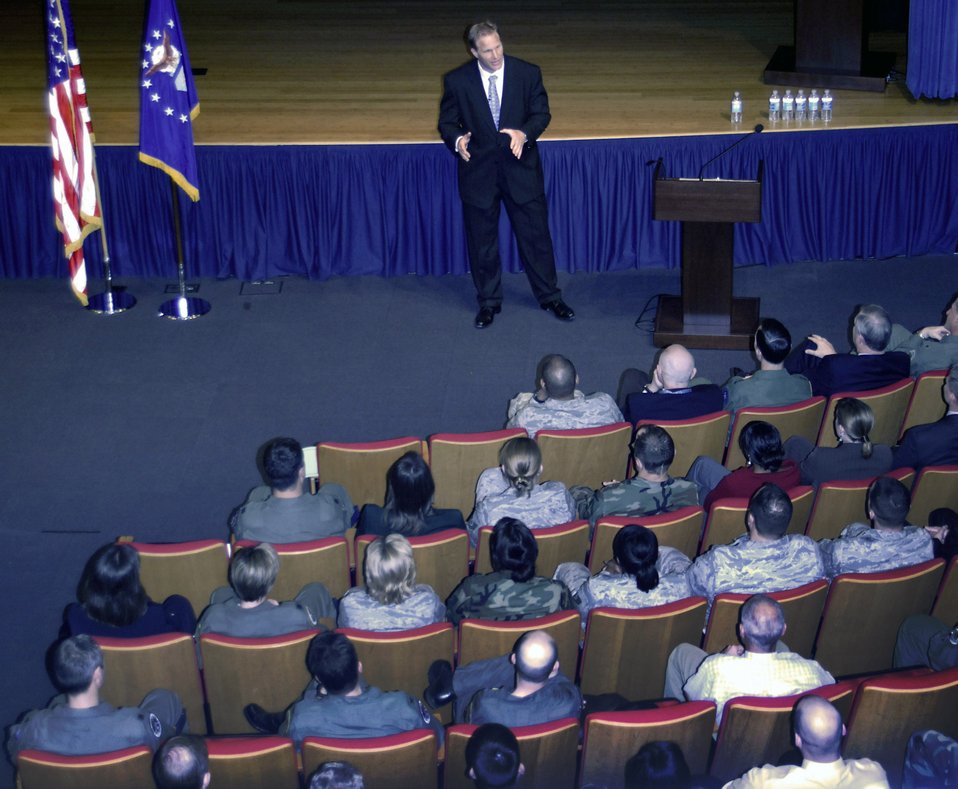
Former A-10 pilot, Cowboy speaks at Pentagon

Chad Hennings, a former A-10 pilot and Dallas Cowboy speaks to Airmen at the Pentagon March 27. Mr. Hennings is a motivational speaker and discussed the challenges of balancing career and family as well as his life experiences in the Air Force and the NFL.